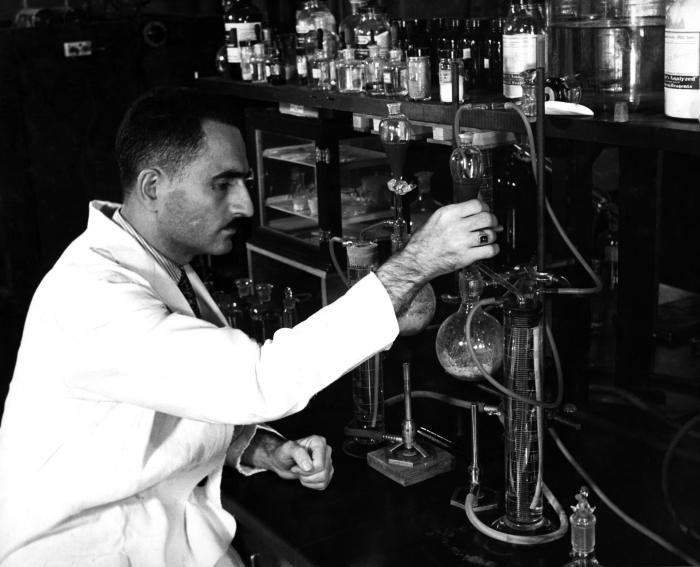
This November, 1943 photograph was provided by the Center for Disease Control's (CDC), National Institute for Occupational Safety and Health (NIOSH). The image depicted a doctor who was analyzing blood samples for the presence of xyledine, also known as xylidine (dimethylaniline), which is a chemical used in the creation of dyes, acting as a dyestuff intermediate. The chemical is also used in the blending of gasoline mixtures. Exposure to xylidine can occur via inhalation, ingestion, eye contamination, or by absorption through the skin. Based on effects seen in animals, xylidine is a potential human carcinogen. This man was not wearing a protective filtered breathing mask, goggles, or gloves while carrying out these experiments.